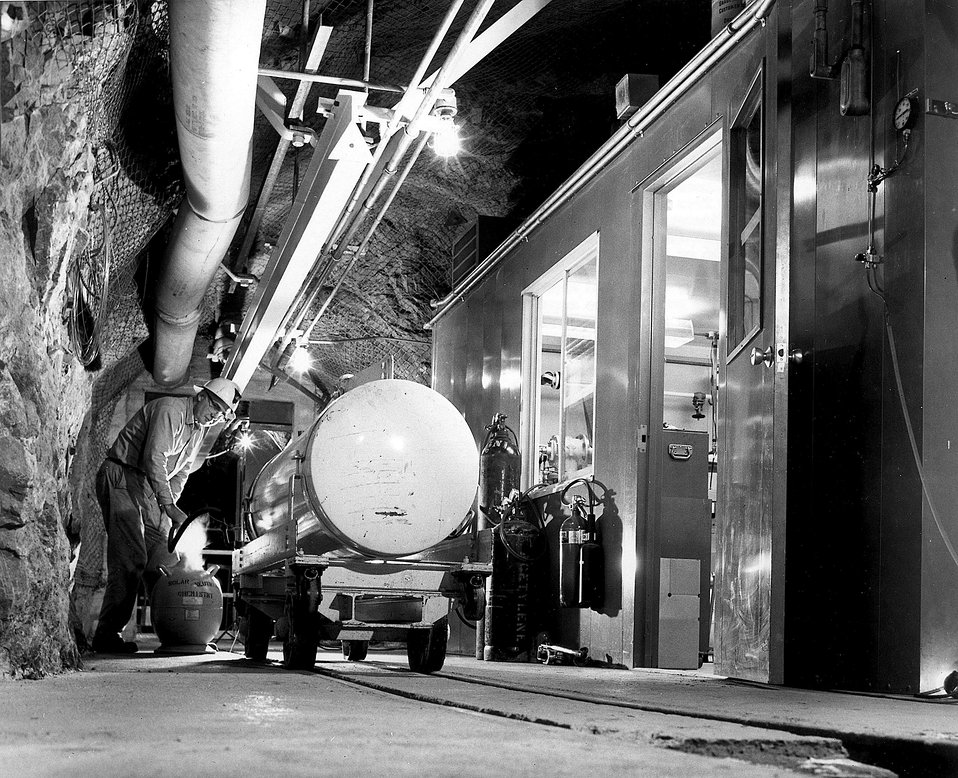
Scene at the Brookhaven solar neutrino experiment, located 4900 feet underground in the Homestake Gold Mine in Lead, South Dakota. c. 1968